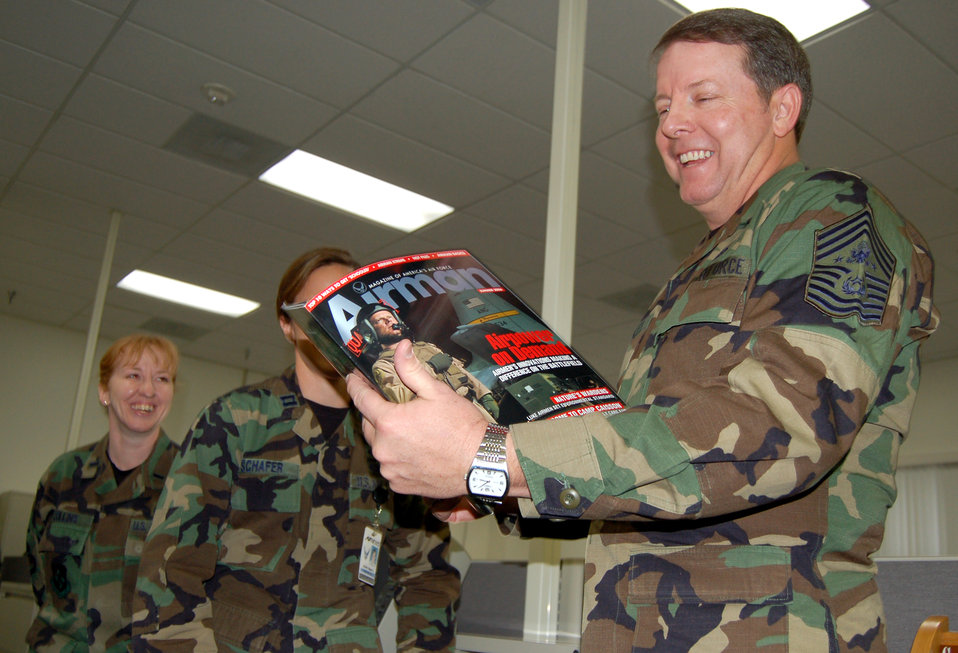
Chief McKinley visits San Antonio

Chief Master Sgt. of the Air Force Rodney J. McKinley reviews an Airman magazine during his visit to the Air Force News Agency in San Antonio, Texas, on Dec. 5.